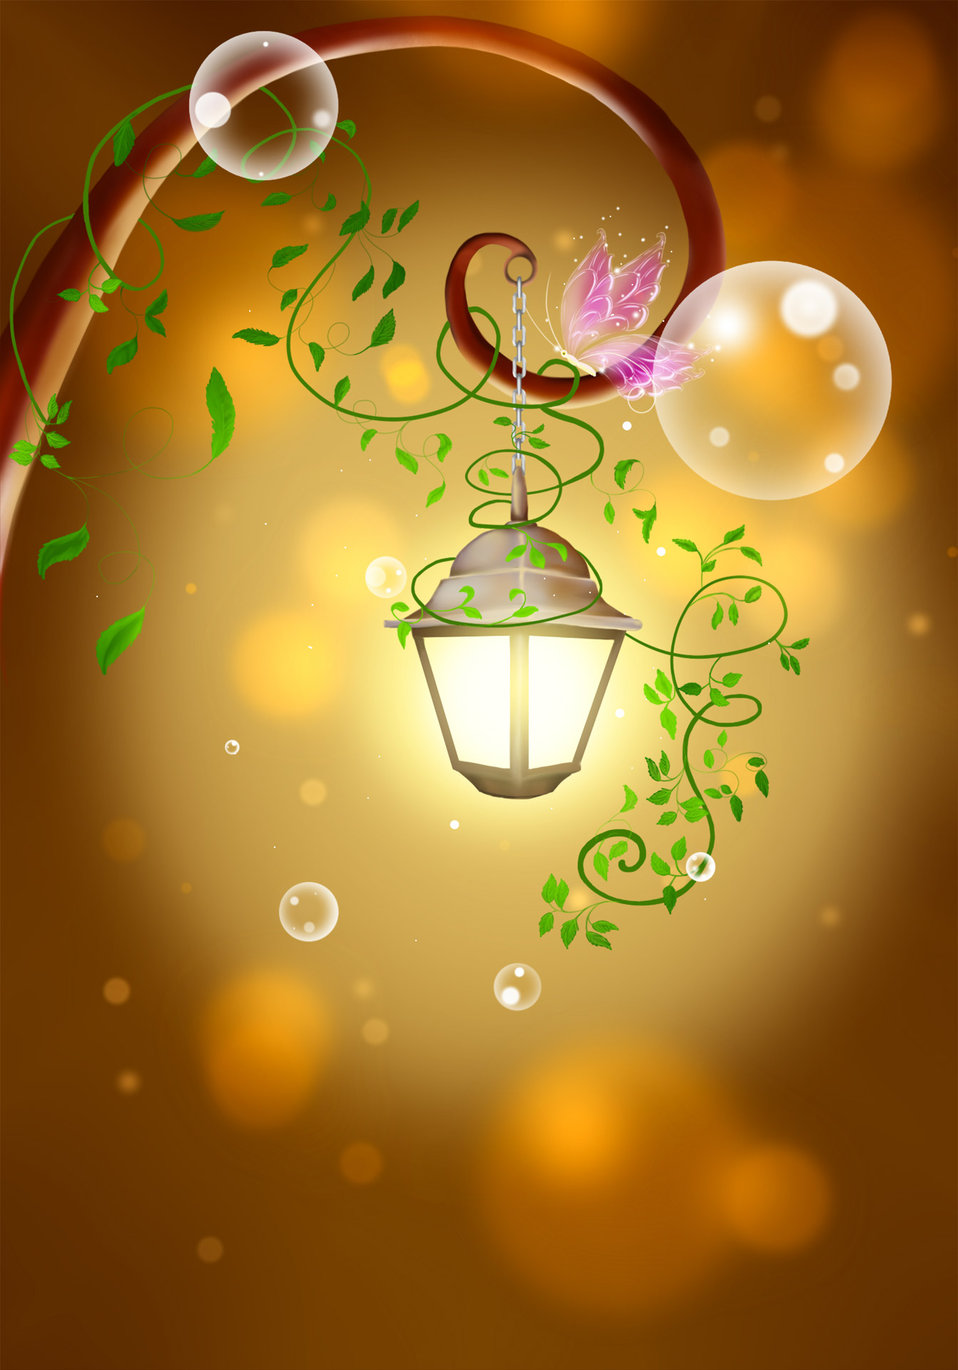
Fairy lantern finished illustration background with a lantern and a butterfly. fantastic story..